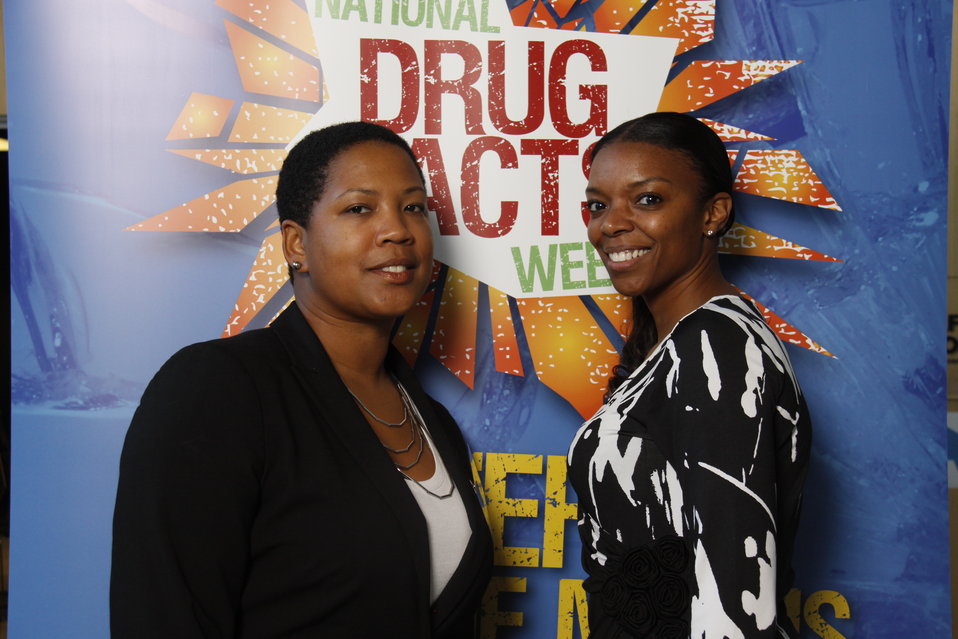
NDFW Mentor Event